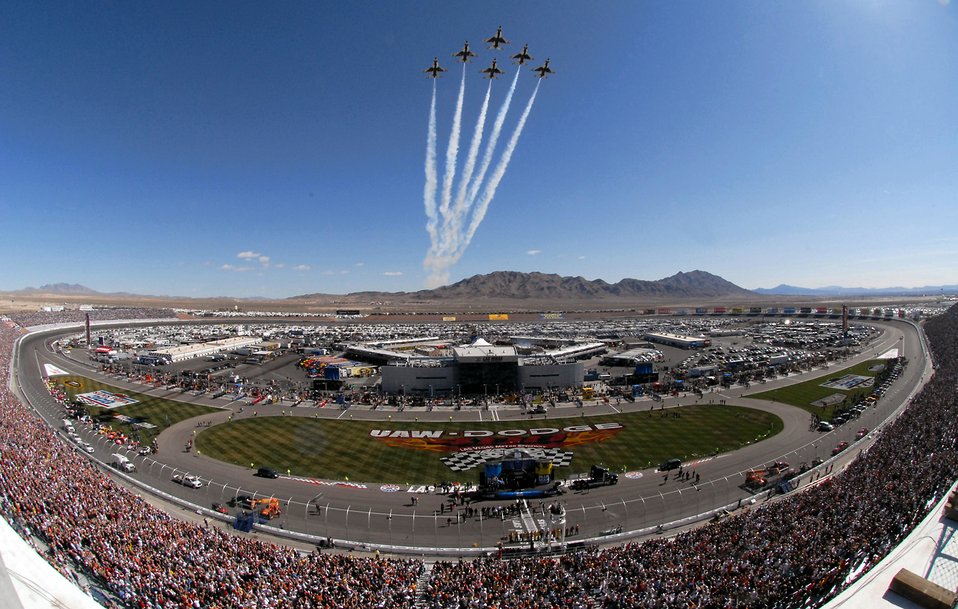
Start your engines

The Thunderbirds, the U.S. Air Force Air Demonstration Squadron, soar over a sold-out crowd at Las Vegas Motor Speedway March 2 before the NASCAR UAW-Dodge 400 Sprint Cup Series race.